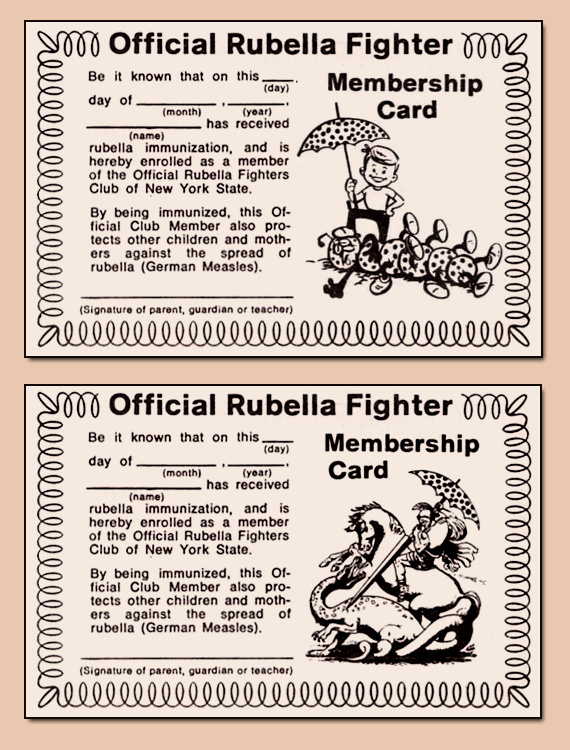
Shown here are two 'Official Rubella Fighter Membership Cards', featuring the 'spotted rubella umbrella'. During the late 1960s and early 1970s, these cards were given to children upon receiving a rubella vaccination.